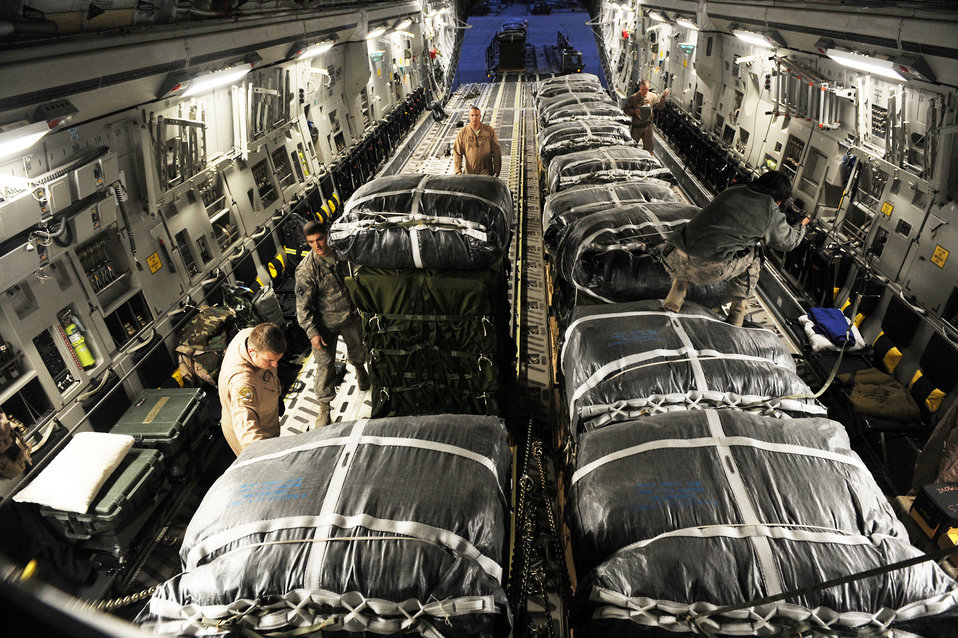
Combat air delivery over Afghanistan

Airmen and U.S. Army Soldiers load 40 containerized-delivery-system bundles of food and water, to be delivered to a forward operating base in Afghanistan, Feb. 1, 2010, at Bagram Air Base, Afghanistan. The Airmen are C-17 loadmasters assigned to the 816th Expeditionary Airlift Squadron and the Soldiers are assigned to the 612th Quartermaster Detachment.